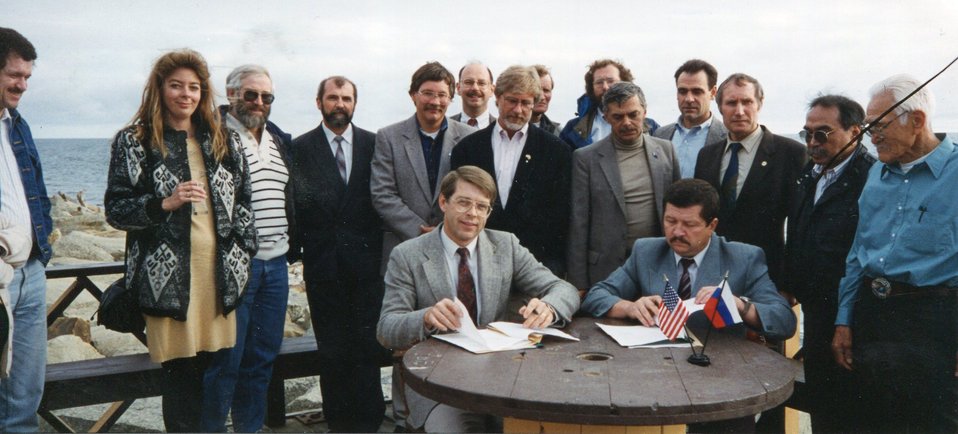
Nome, Alaska

U.S. and Russian wildlife managers discuss polar bear management during a meeting in Nome, Alaska in the 1990s.